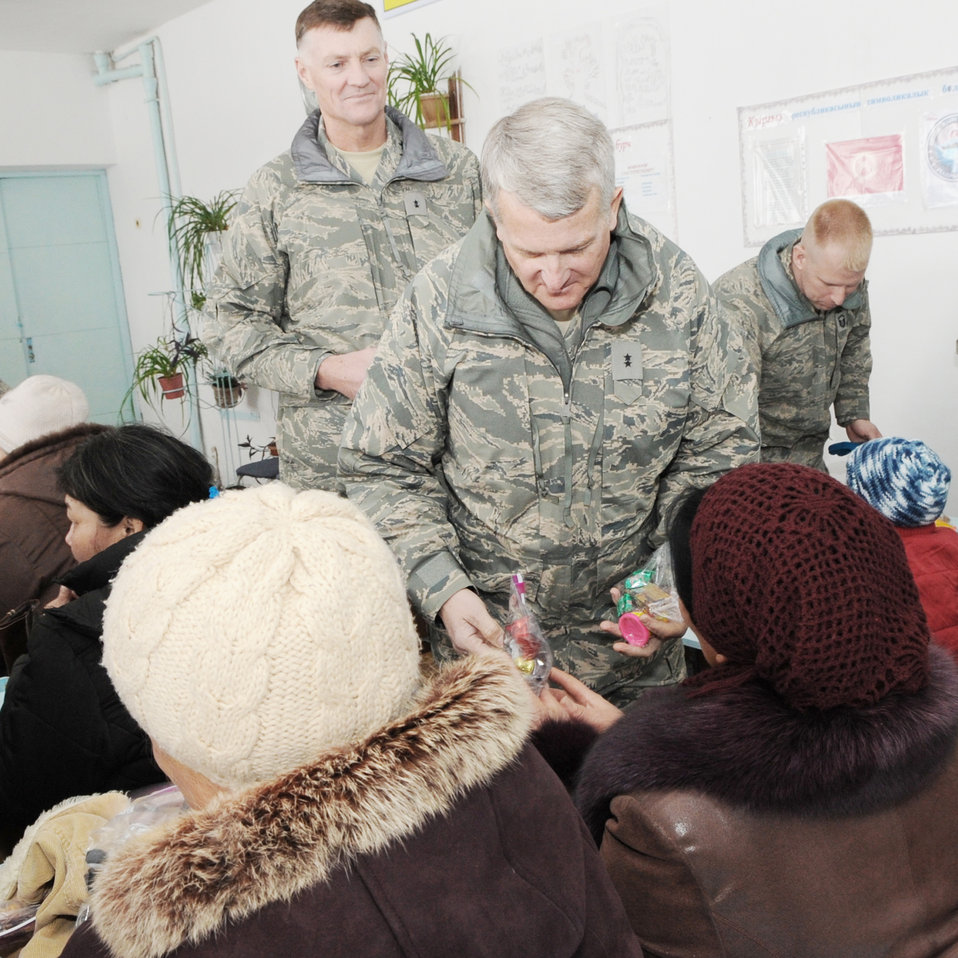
Generals visit Kyrgyz

Maj. Gen. David J. Eichhorn and Maj. Gen. Andrew E. Busch hand candy to elementary school children Feb. 9, 2010, at the Grozd School in Grozd Village, Kyrgyzstan. General Eichhorn is the commander of the Air Force Flight Test Center and General Busch is the commander of the Ogden Air Logistics Center.